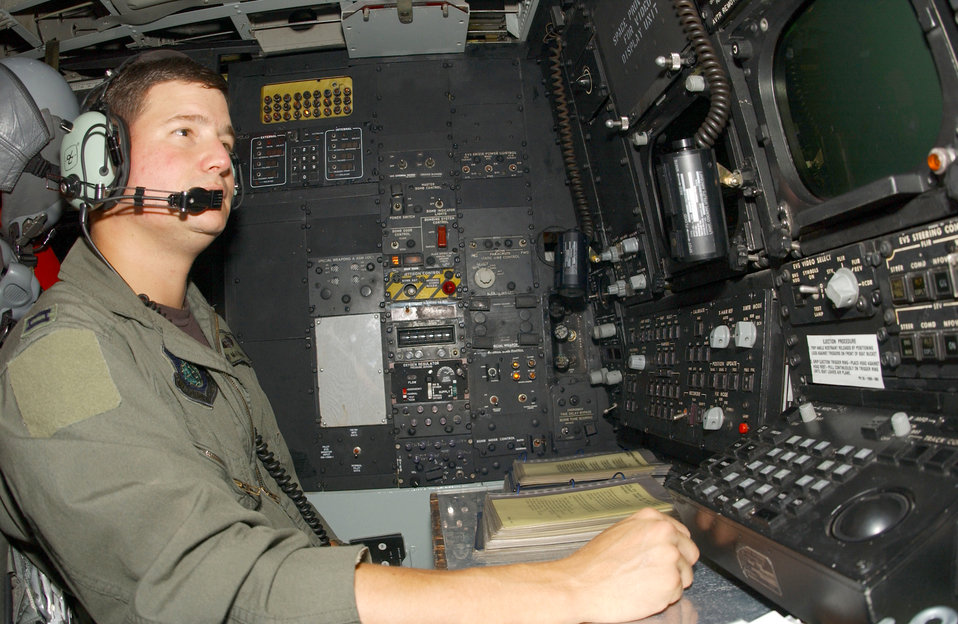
At the controls

HICKAM AIR FORCE BASE, Hawaii -- Capt. Andy McElyaine performs a safety check on a B-52 Stratofortress here April 6 before flying to Anderson Air Force Base, Guam. Captain McElyaine is a B-52 deputy mission leader and radar navigator with the 36th Air Expeditionary Wing.